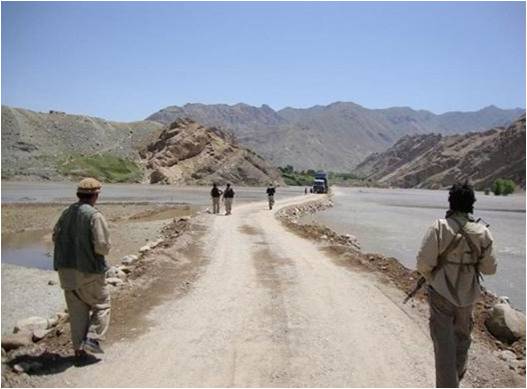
River Road Rises from the River